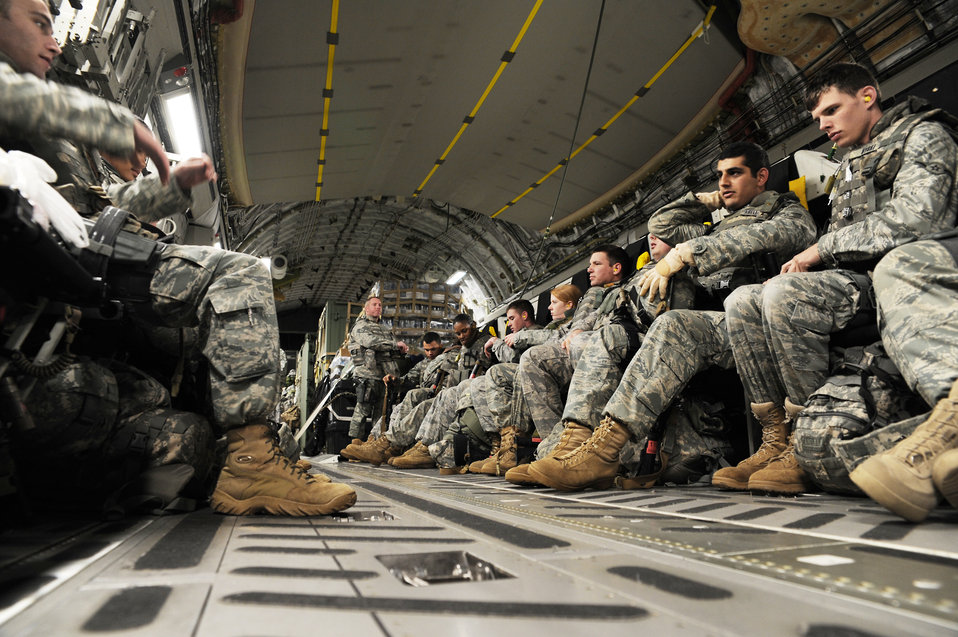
Charleston Airmen ship emergency funds to U.S. Embassy in Haiti

Air Force security forces members prepare to takeoff on a C-17 Globemaster III to support relief efforts in Haiti Jan. 22, 2010, at Charleston Air Force Base, S.C. The security forces members are from Moody AFB, Ga., and Little Rock AFB, Ark.